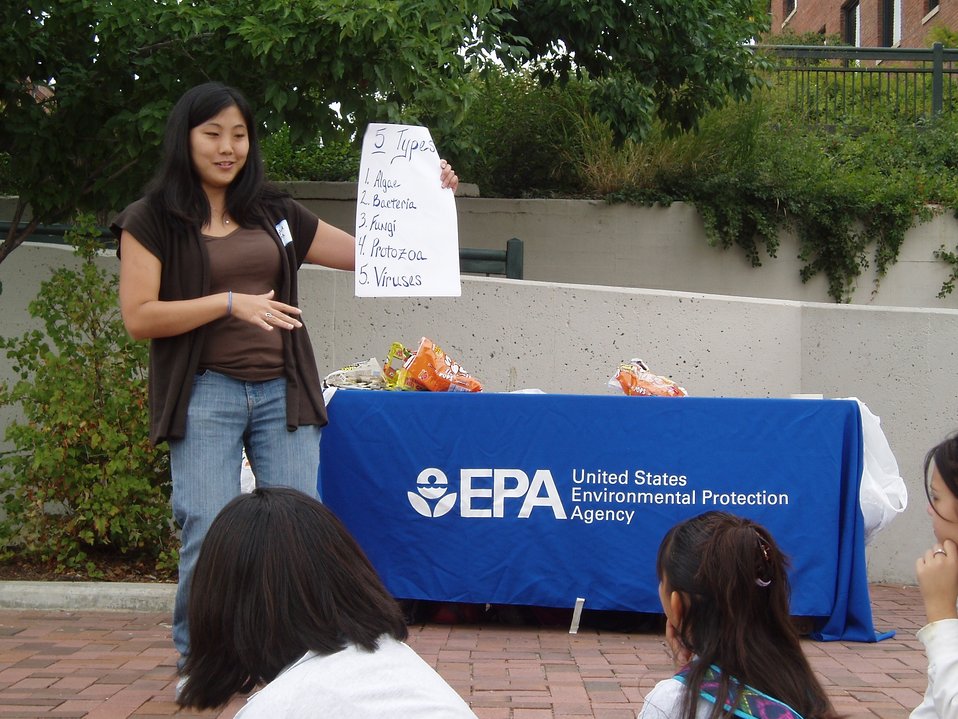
EPA Volunteer Teaching Students on World Water Monitoring Day

Students learned about microbiology from an EPA water specialist. Students learned how to identify five types of microorganisms; algae, bacteria, fungi, protozoa and viruses. Students were then quizzed about what they had learned.

To find out more about Region 8’s microbiology lab visit: www.epa.gov/region8/about/lab/labmicro.html